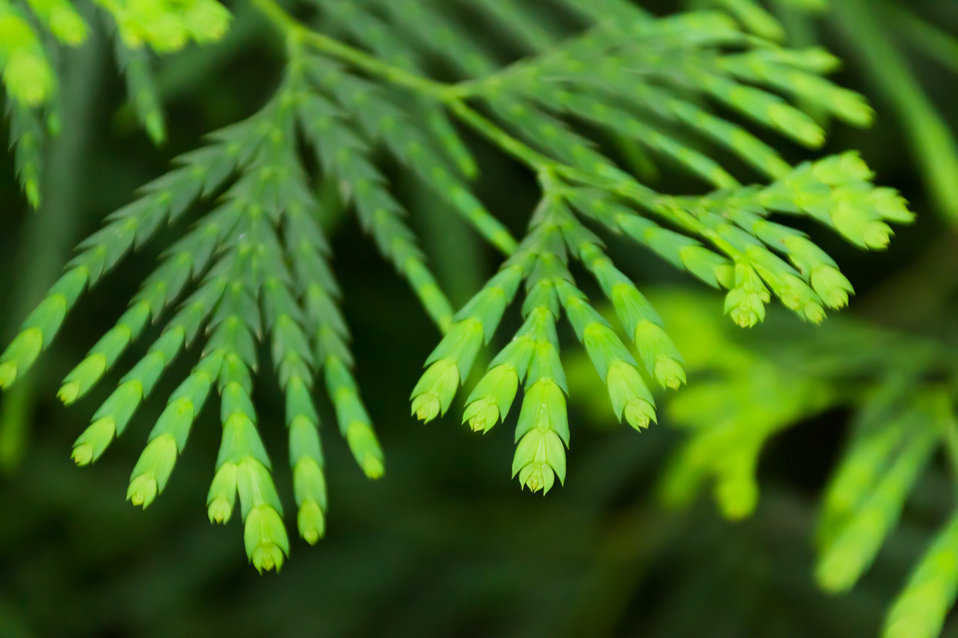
Chamaecyparis green background.